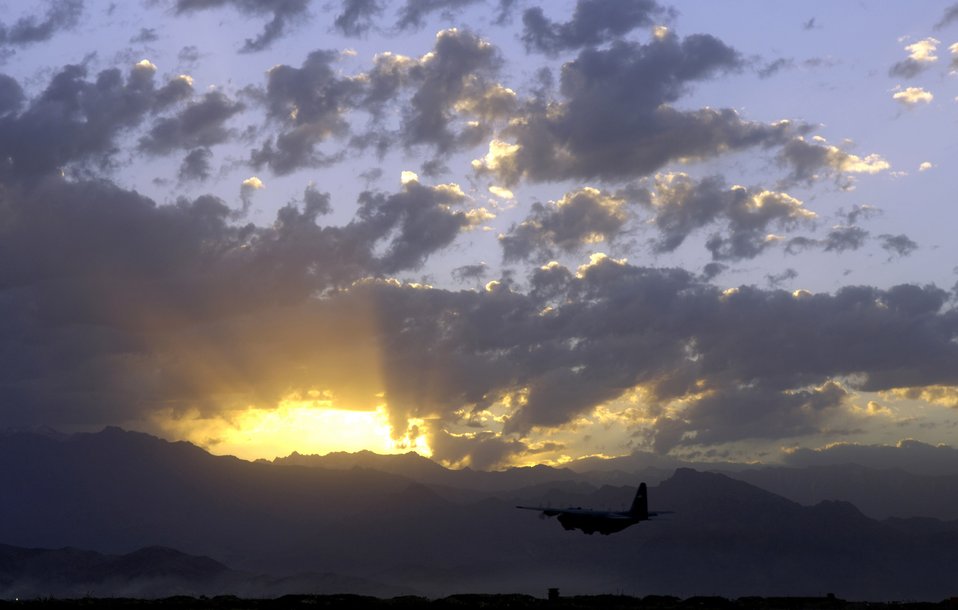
Hercules lifts off

A C-130 Hercules from the 774th Expeditionary Airlift Squadron takes off from Bagram Air Field, Afghanistan, at sunrise on Saturday, June 10. The squadron flies approximately five missions a day, providing airlift and airdrops to troops in theater.